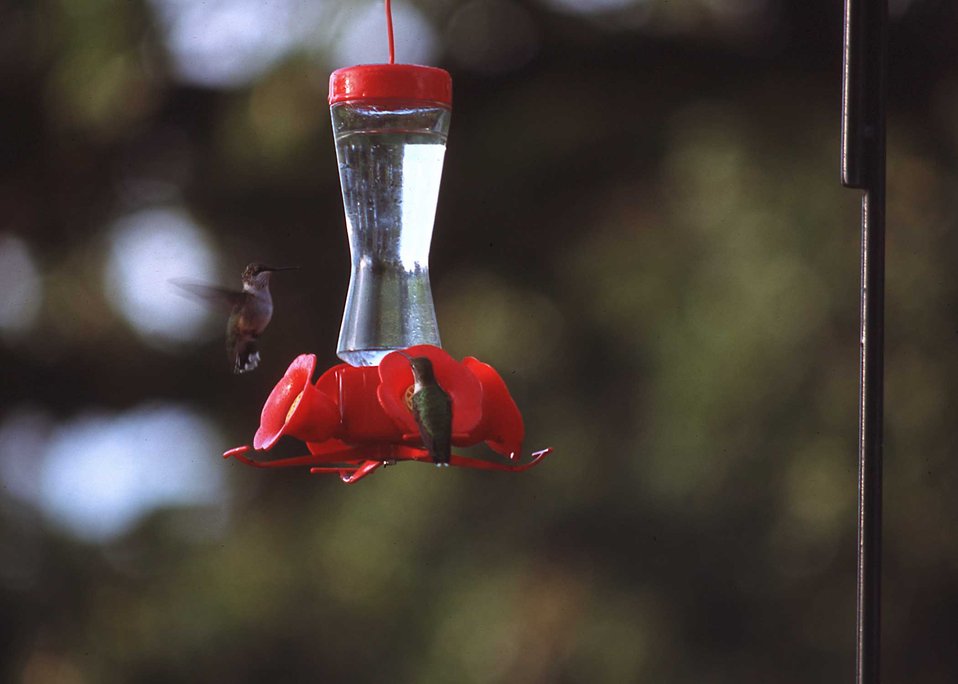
A hummingbird feeder attracts hummingbirds to a backyard in Story County, Iowa.